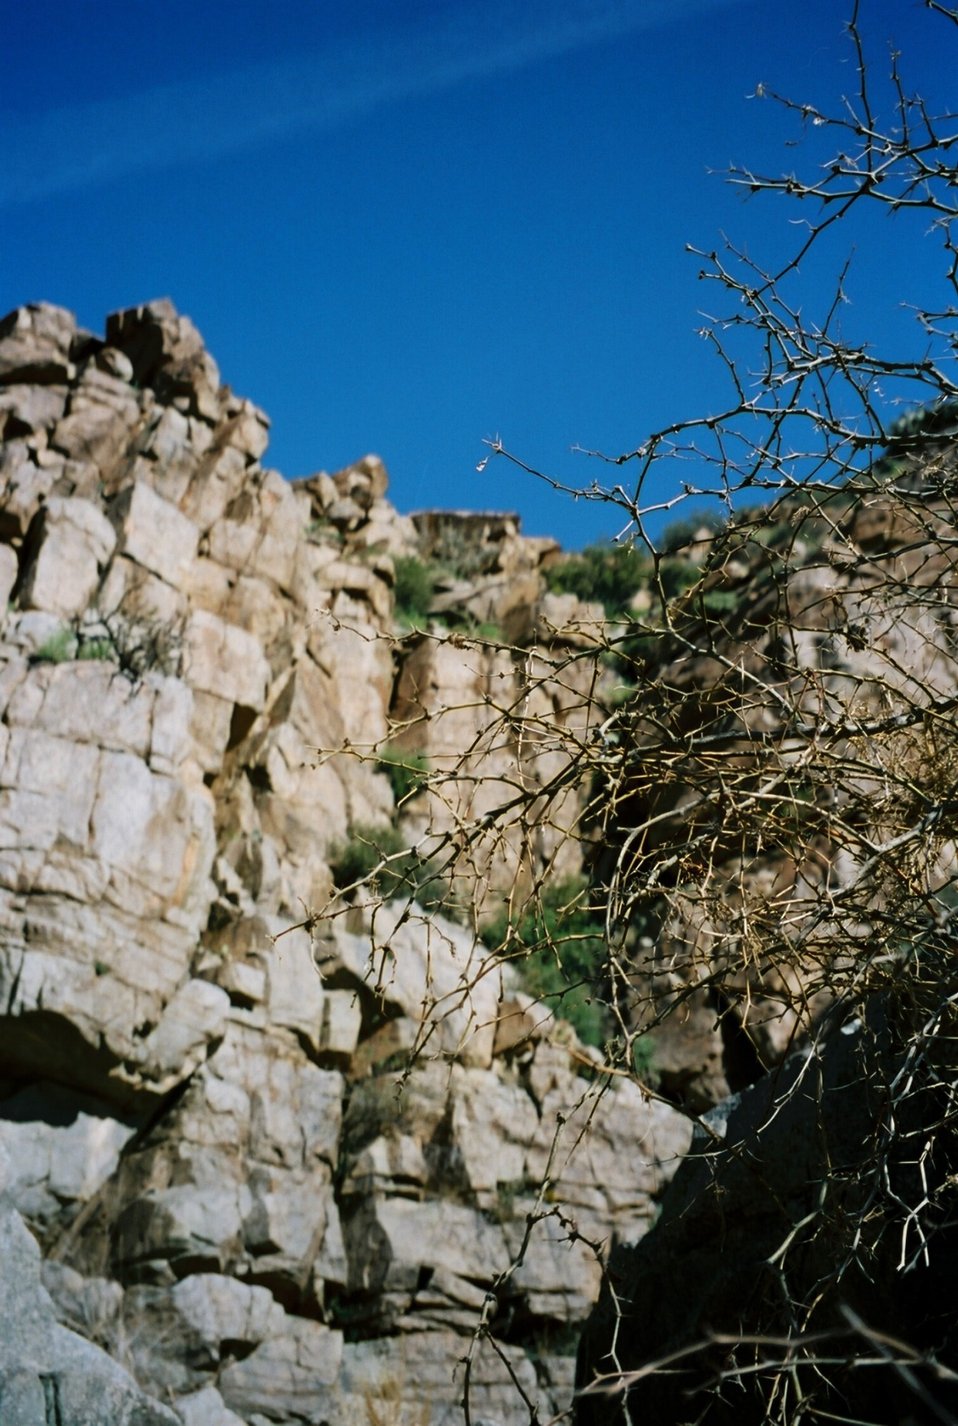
A cliff face out of focus in the background, with a tree in focus in the foreground.